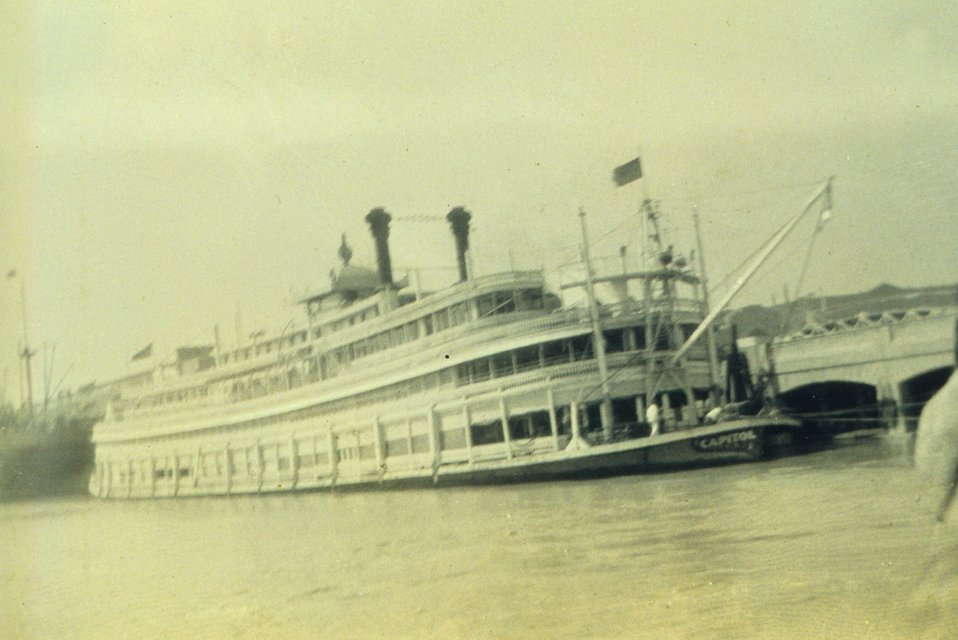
New Orleans waterfront. The sternwheeler CAPITOL.